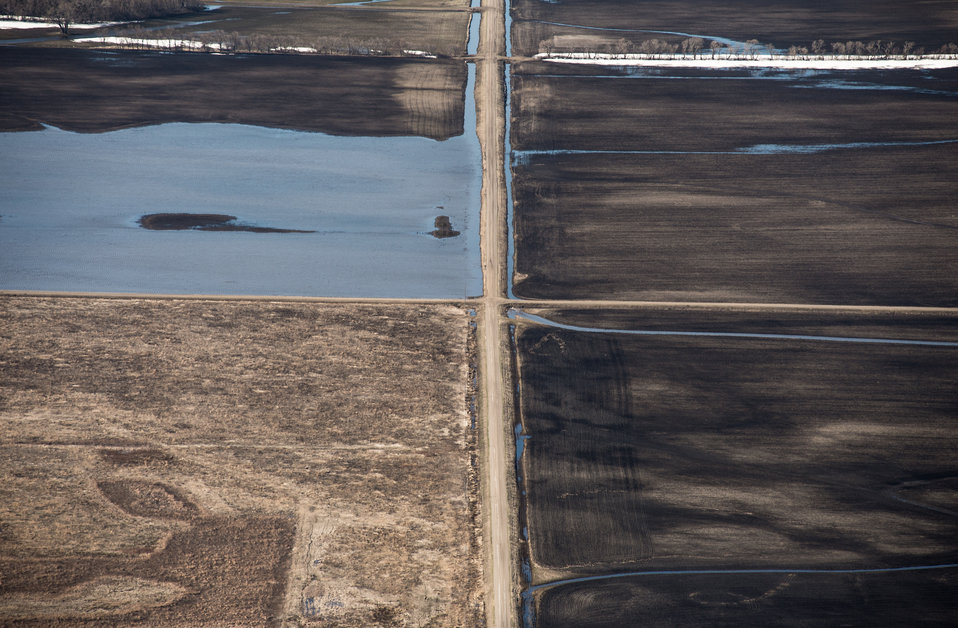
Vertin, U.S. Department of Agriculture (USDA) Natural Resources Conservation Service (NRCS) Wetland Reserve Program (WRP) in Wilkin County, MN, on Tuesday, April 30, 2013. For information about this and other programs from the USDA Red River Basin Initiative (RRBI) please see www.mn.nrcs.usda.gov/news/features13/RRBI.html.